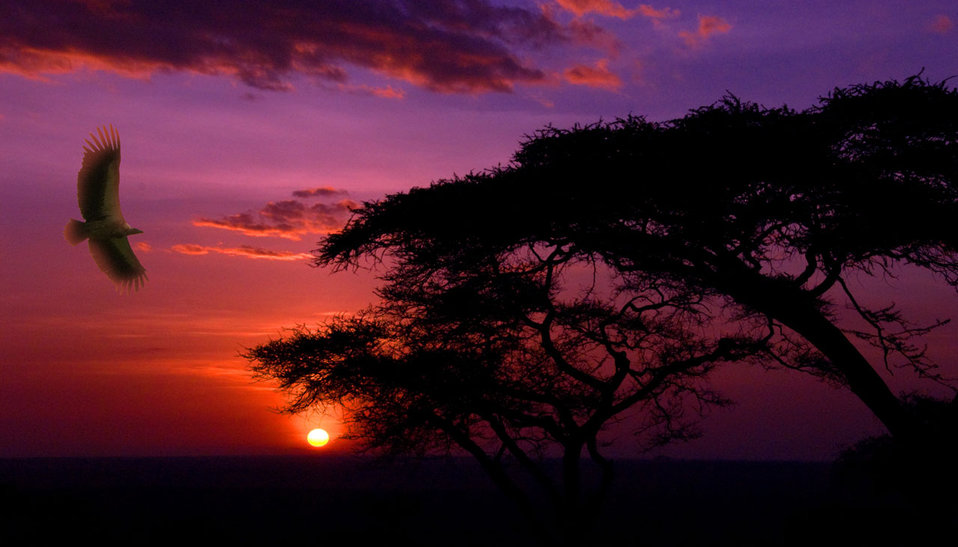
Sunset in serengeti

Colorful sunset with flying bird in the serengeti, tanzania, africa.